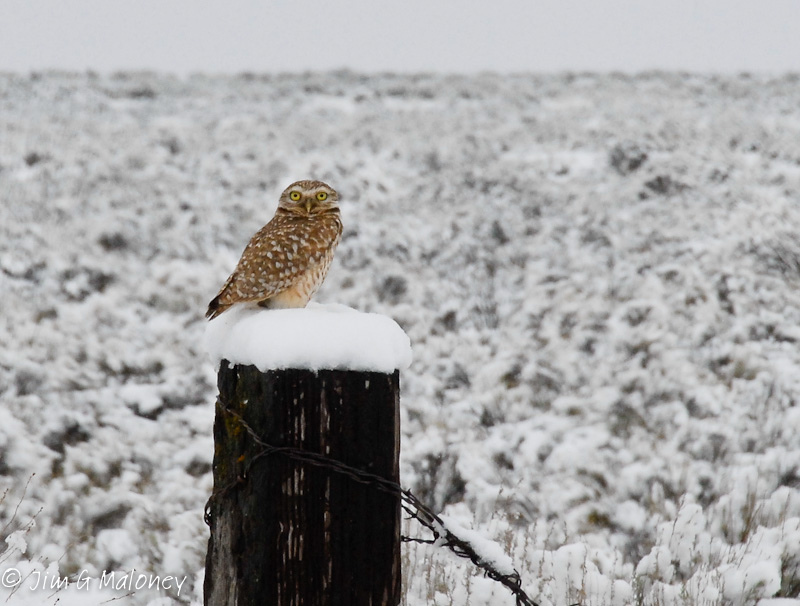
March

burrowing owl
Malheur National Wildlife Refuge, OR